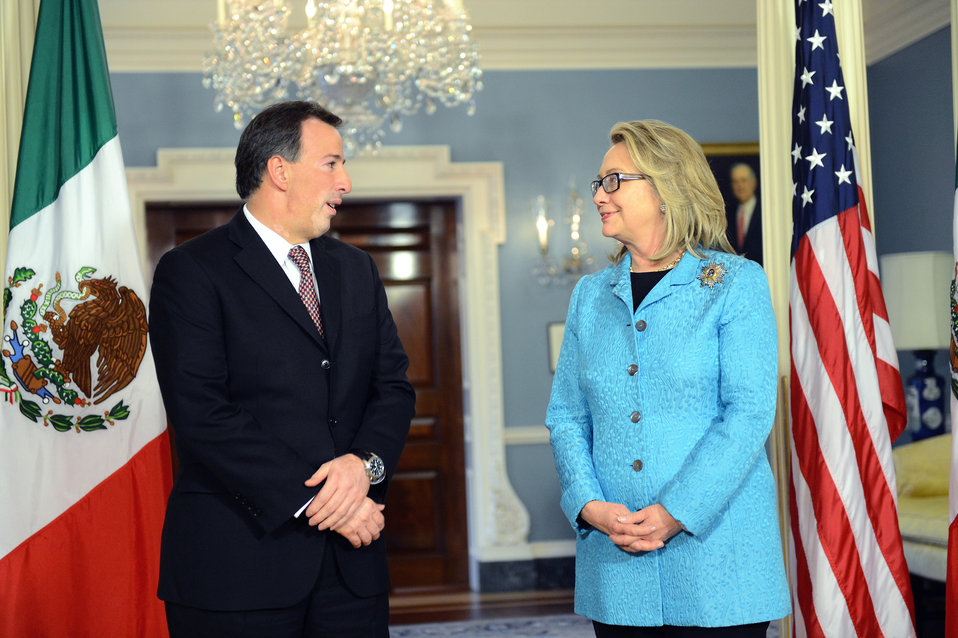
Secretary Clinton Meets With Mexican Foreign Secretary Jose Antonio Meade

U.S. Secretary of State Hillary Rodham Clinton meets with Mexican Foreign Secretary Jose Antonio Meade at the U.S. Department of State in Washington, D.C., January 30, 2013.